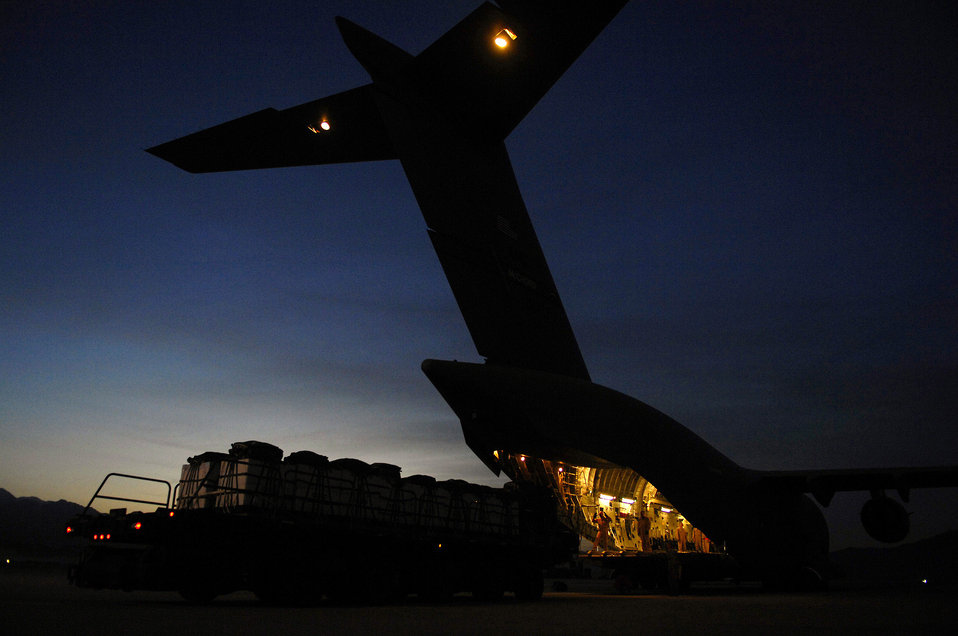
Afghanistan airdrop

A C-17 Globemaster III is being loaded with 40 bundles for a Joint Precision Airdrop Delivery System of humanitarian supplies April 13 at Bagram Air Base, Afghanistan, for a drop zone in Afghanistan. Aircrew Airmen and the C-17 are deployed to the 816th Expeditionary Airlift Squadron in Southwest Asia.